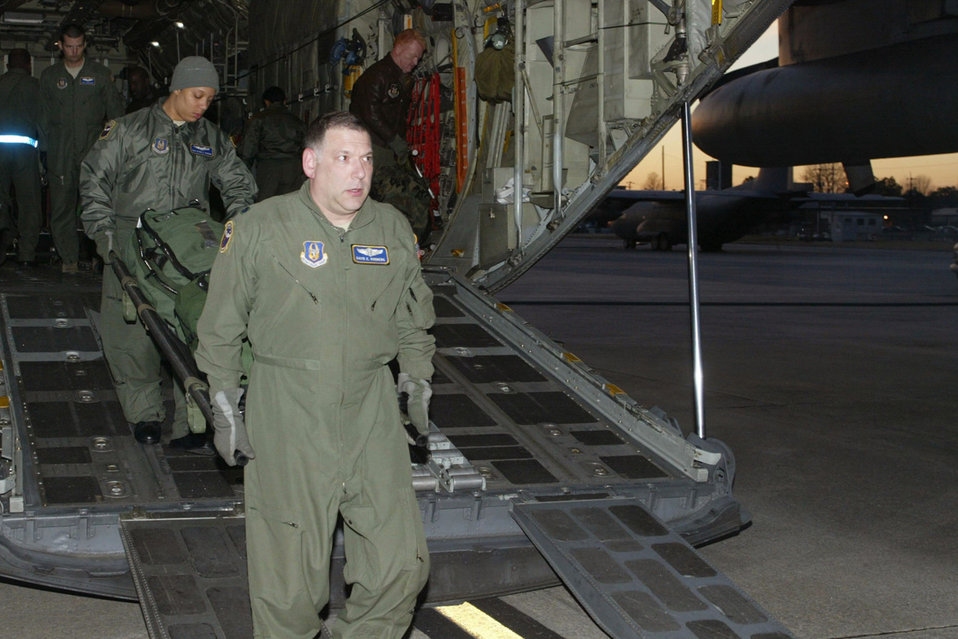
Dobbins medical team returns from Haiti relief mission

Lt. Col. David Rodberg and Tech. Sgt. Alycia Jackson offload medical equipment they used to provide critical assistance to Haitians Jan. 31, 2010, at Dobbins Air Reserve Base, Ga. The crew returned from a two-week deployment in support of Operation Unified Response. Colonel Rodberg is the 94th Aeromedical Evacuation Squadron medical crew director and Sergeant Jackson is a 94th AES medical technician.